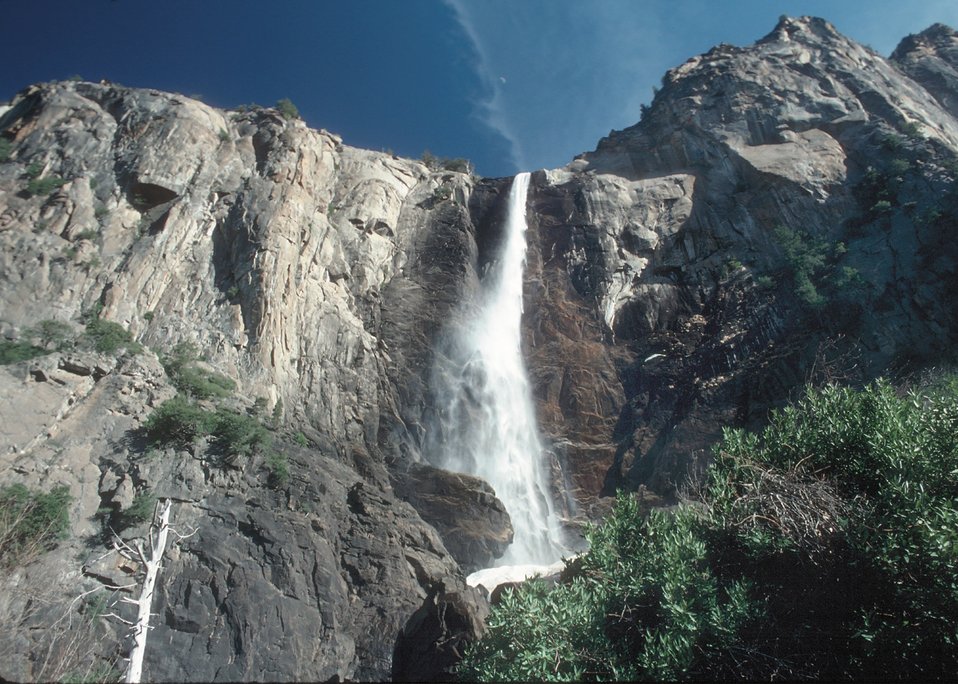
Bridalveil Falls, Yosemite National Park, California